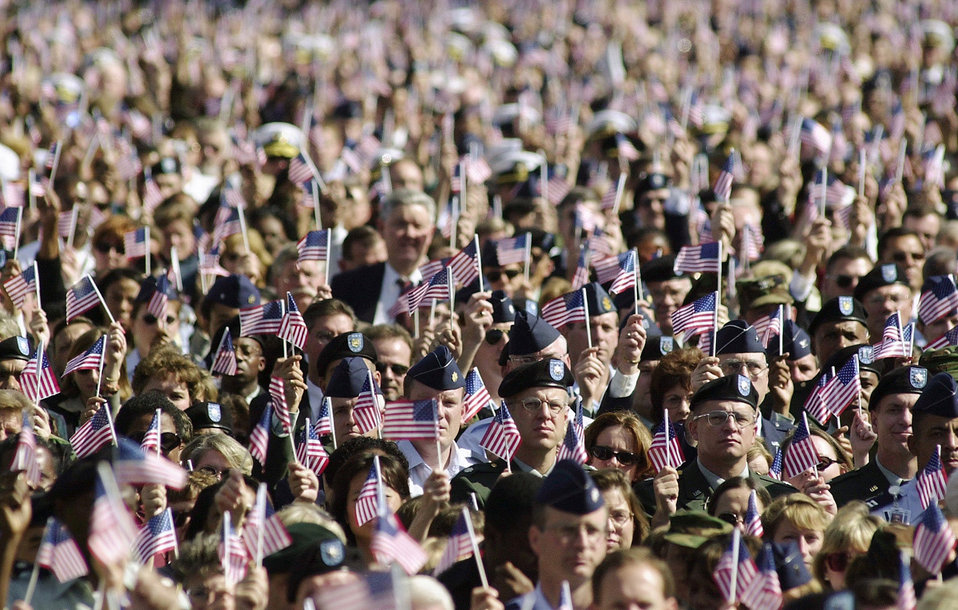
Remember

WASHINGTON -- More than 20,000 people attended a ceremony, held on the Pentagon Parade Ground Oct. 11, to remember those killed in the Sept. 11 terrorist attack at the Pentagon.